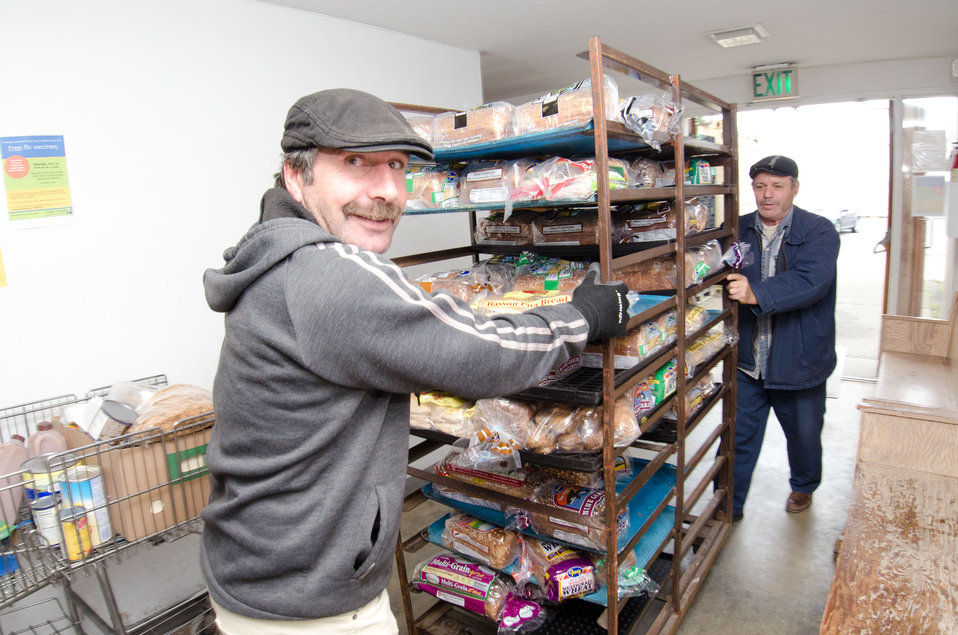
Volunteers cart fresh bread into the Tukwila Pantry, Tukwila. WA, on Thursday, October 20, 2011. The pantry provides monthly food bank services to individuals and families in cities of Tukwila, SeaTac, Burien and the Boulevard Park community. Congregate meal service is held each Tuesday at their location in the Riverton Park United Methodist Church. The church provides some funds, several large rooms, and outdoor operating space for the pantry’s food distribution, shipping container storage units, trailer, tents, shelters and refrigeration truck. The pantry's weekly Tuesday’s Table provides 150 hot meals to seniors, low-income families, homeless individuals and those in transition. Additionally, emergency referral services are provided to assist individuals connecting with agencies that can address their needs. Executive Director Joe Tice grew up in Tukwila and feels compelled to give back to economically challenged community of 25,000 families in 3,000 households. “Since the pantry’s founding in 2000, census figures show poverty has risen 300%,” said Joe Tice. “85-95% of elementary school children are enrolled in SNAP (U.S. Department of Agriculture Supplemental Nutrition Assistance Program).” At the pantry’s height, it delivered 3.8 million pounds of food (2009), but with the economic downturn Tice projects 2011 deliveries to total 2.6 million pounds. Tice considers Tukwila Pantry as one of the smaller distribution points in the greater Seattle area. Some canned and dry goods are provided by
The Emergency Food Assistance Program (TEFAP) a Federal program that helps supplement the diets of low-income needy persons, including elderly people, by providing them with emergency food and nutrition assistance. A significant amount of the pantry’s food comes through Northwest Harvest, Washington's only nonprofit statewide food bank distributor; and Food Lifeline, the largest nonprofit food distributor in the state who solicit, receive, and distribute over 24 million meals of food to nearly 700,000 people through our network of 300 food banks (such as Tukwila Pantry), shelters and meal programs.